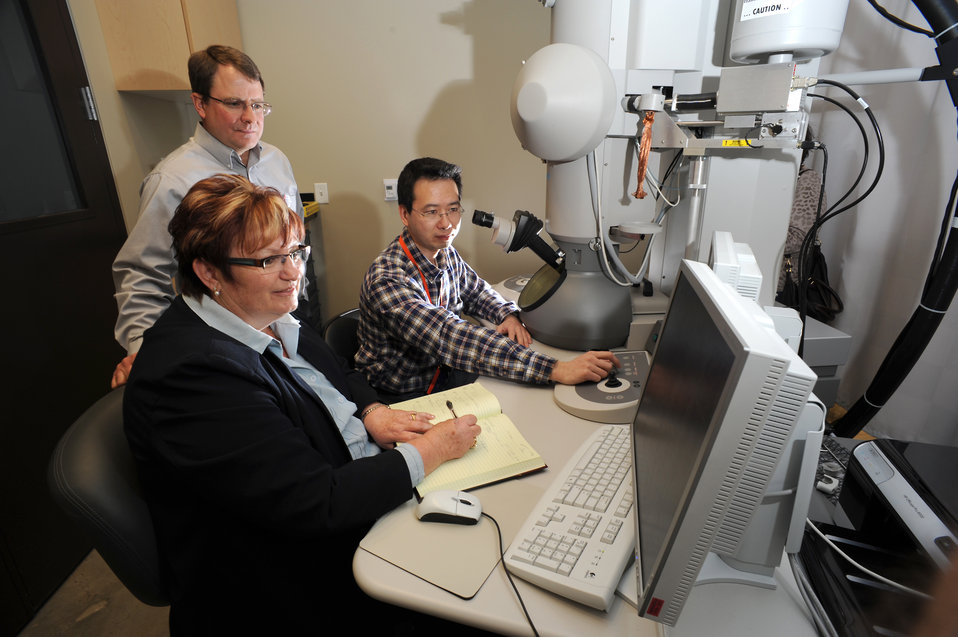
IDAHO NATIONAL LABORATORY RESEARCHERS ANALYZE TRISO FUEL

TRISO fuel particles are the size of poppy seeds. Break one open and it looks like tiny jaw-breakers. An outer shell of carbon coats a layer of silicon carbide, which coats another layer of carbon and the uranium center- where the energy-releasing fission happens. By-products of the fission process have the potential to escape the fuel, especially at very high temperatures. Even at 1,800, which each boast their own primary containment system.